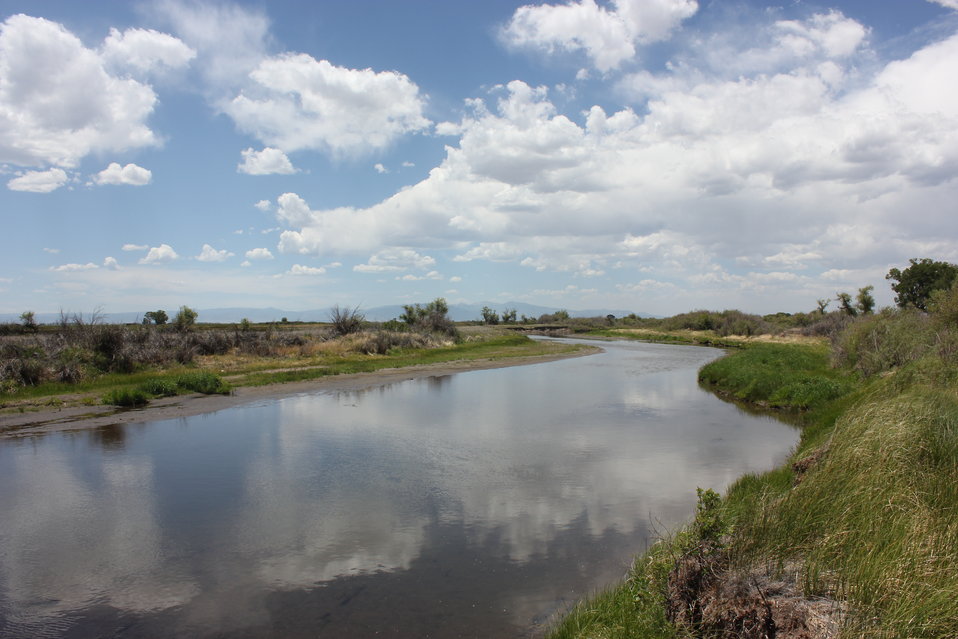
Rio Grande River